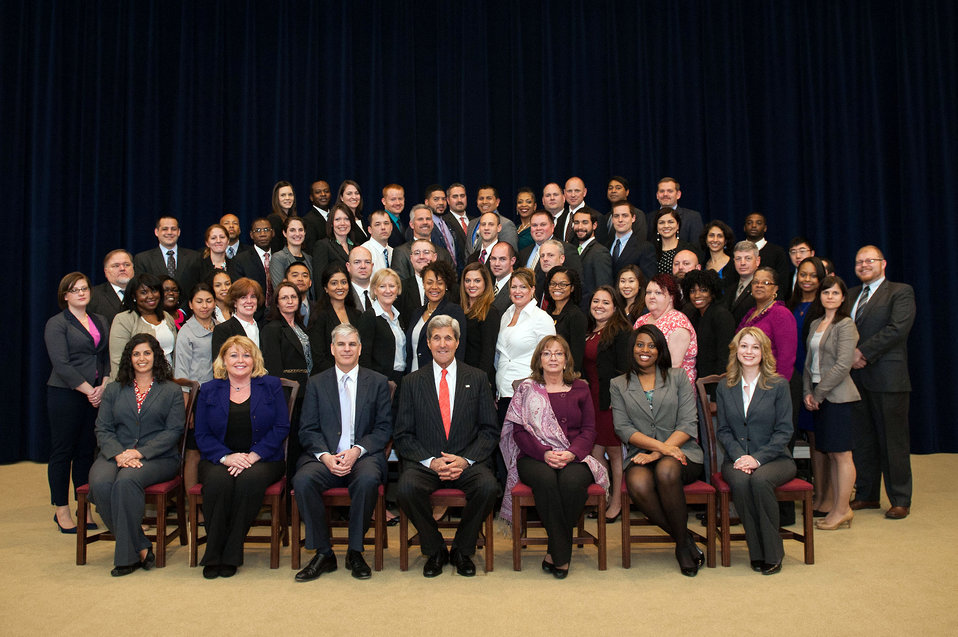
Secretary Kerry with the 103rd Civil Service Class

U.S. Secretary of State John Kerry poses for a photo with members of the 103rd Civil Service Class at the U.S. Department of State in Washington, D.C., on April 25, 2014.